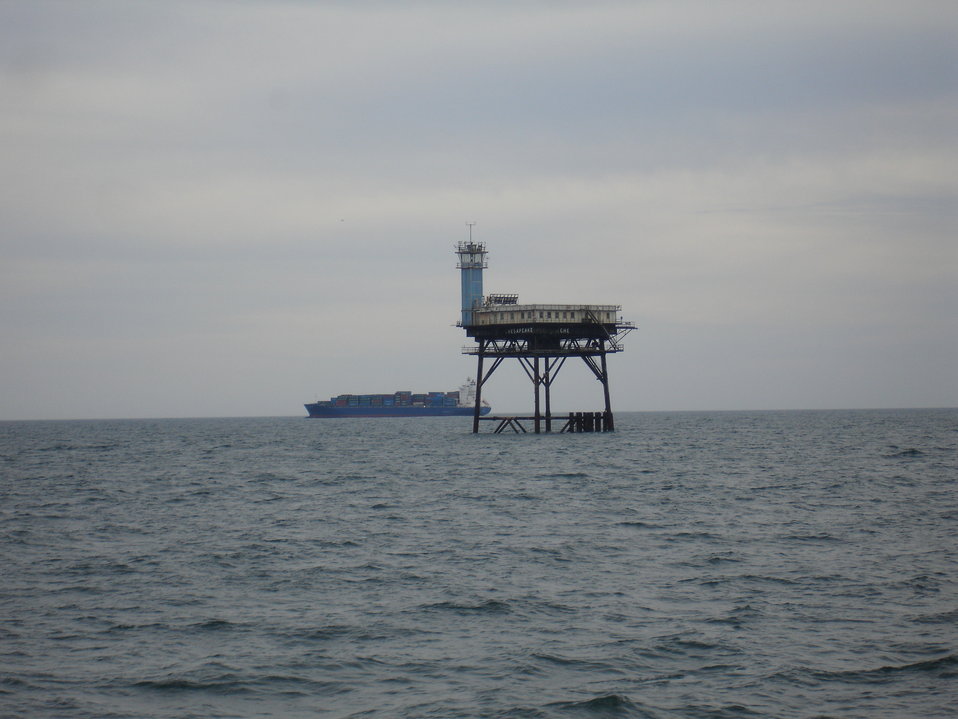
Chesapeake Light off the entrance to Chesapeake Bay.